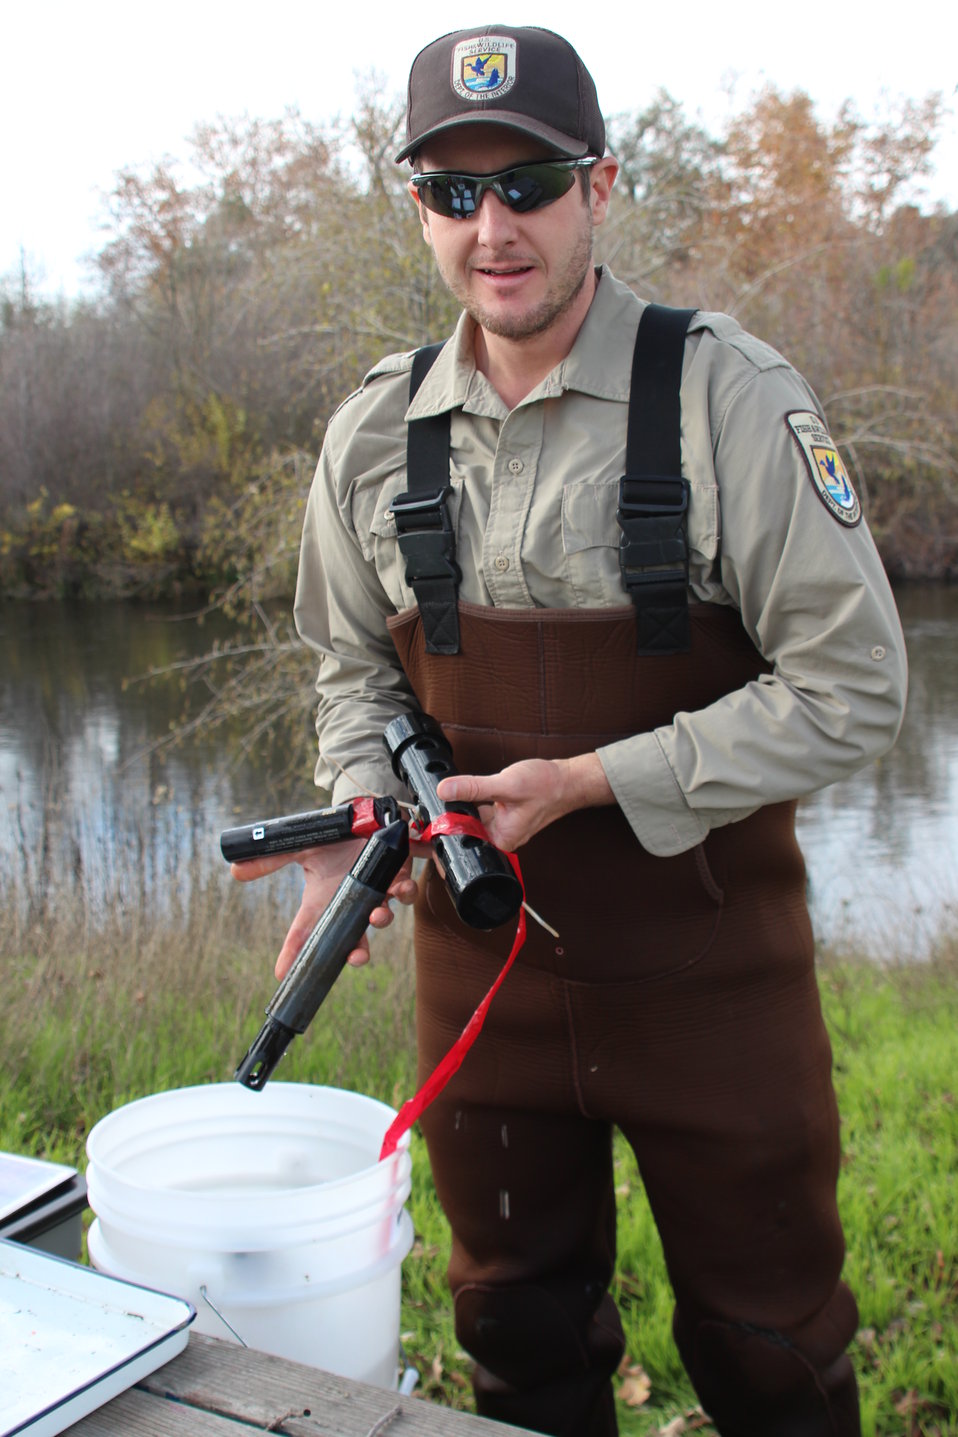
Service biologist holds egg tube with thermomter attached

Each tube is connected to equipment that monitors water temperature and other river condition. This data is later combined to with egg survival rates to see what areas of the river are best for salmon spawning.